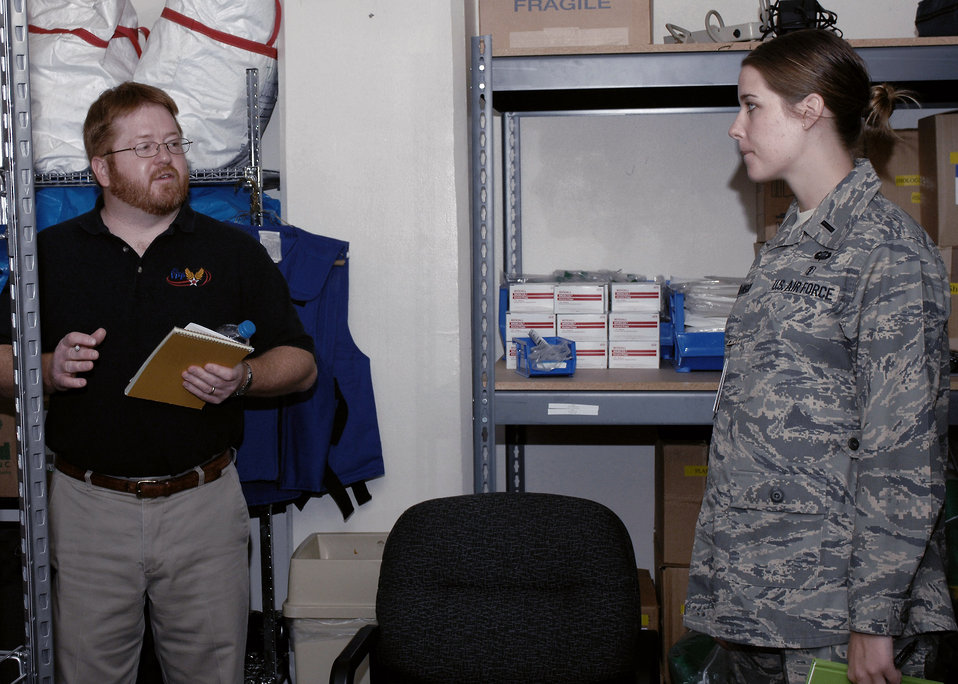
Volunteer Protection Program visit

Dennis Ritko discusses safety procedures and how to improve them with 1st Lt. Carly Johnson. Mr. Ritko is a part of the Volunteer Protection Program team that visited Cannon Air Force Base, N.M, Nov. 3 to 7. The team was here to help improve current safety procedures at the base. Lieutenant Johnson is assigned to the 27th Special Operations Aerospace Medicine Squadron.